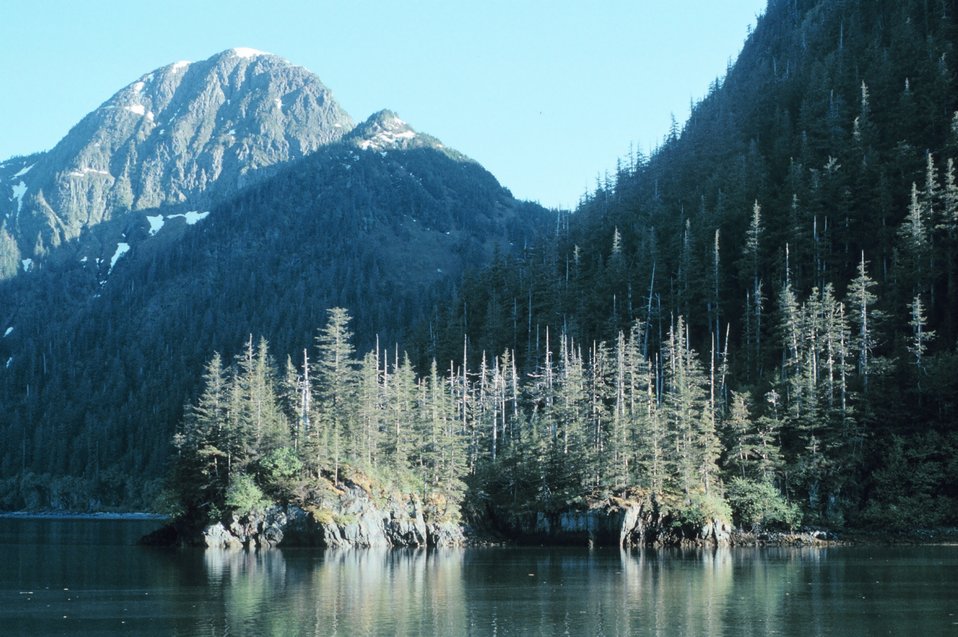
Prince William Sound